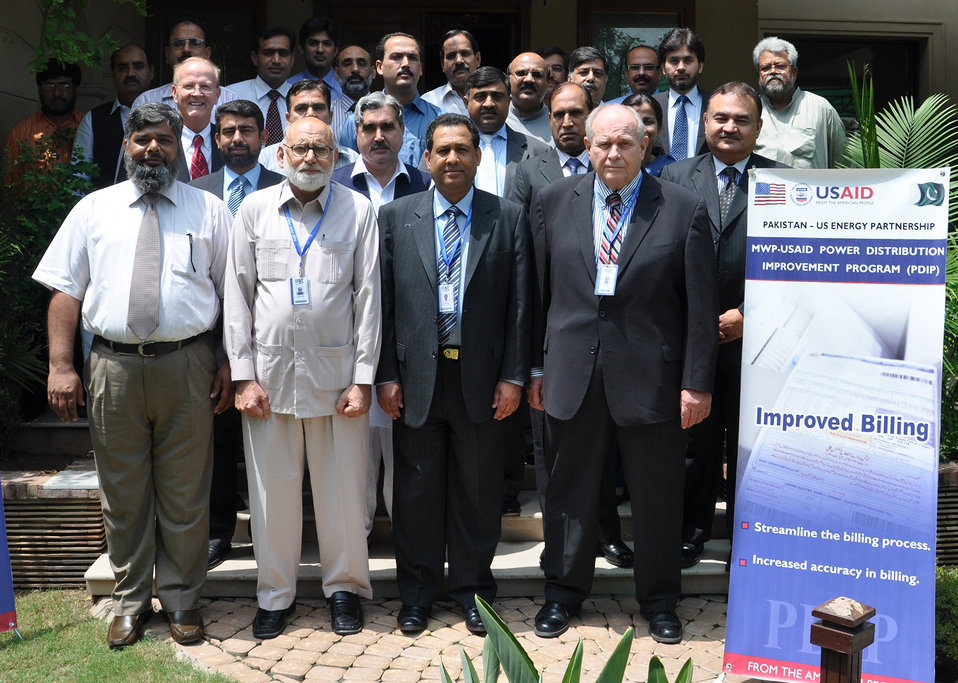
USAID Power Distribution Improvement Program

Islamabad, July 29, 2011 - Mr. Dick Dumford, Chief of MWP – USAID Power Distribution Improvement Program (PDIP) along with the representatives of Power Distribution Companies (DISCOs).

The USAID Power Distribution Improvement Program (PDIP) organized a workshop of senior DISCO management to introduce latest financial management system as part of the assistance from USAID to DISCOs to improve their accounting manuals, internal audit management system and preparing Enterprise Resource Planning (ERP). The workshop was attended by the Chief Financial Officers and Finance Directors of the eight government-owned power distribution companies of Pakistan.